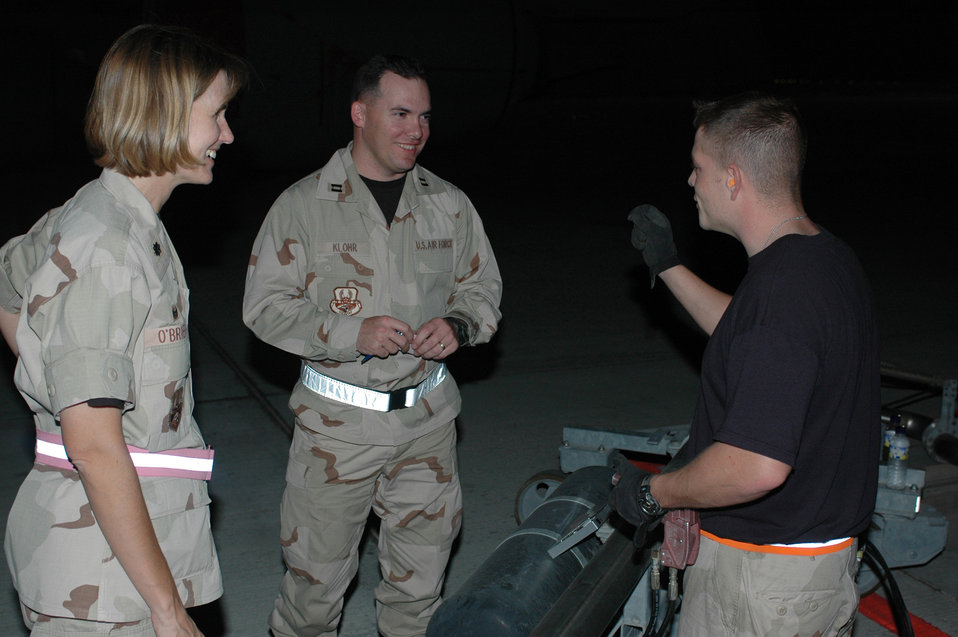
POL Airmen surpass one billion gallons

Senior Airman David Beatty, 379th Expeditionary Logistics Readiness Squadron Fuels Management Flight, chats with Lt. Col. Kristina O'Brien, 379th ELRS commander, and Capt. John Klohr, 379th Fuels Management Flight commander, after pumping the billionth gallon of fuel.